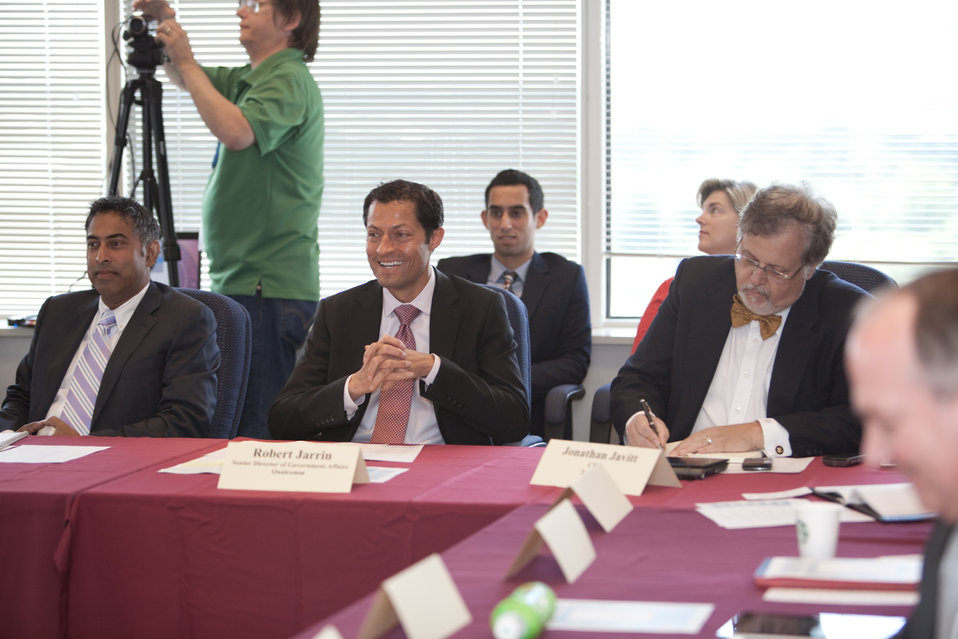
mHealth Attendees at FCC's Headquarters

Members from the health industry attendees Anand Iyer (President and COO) of WellDoc, Robert Jarrin (Senior Director of Government Affairs) of Qualcomm and Jonathan Javitt (CEO) of Telcare.

June 6, 2012 - FCC Headquaters | Washington, DC